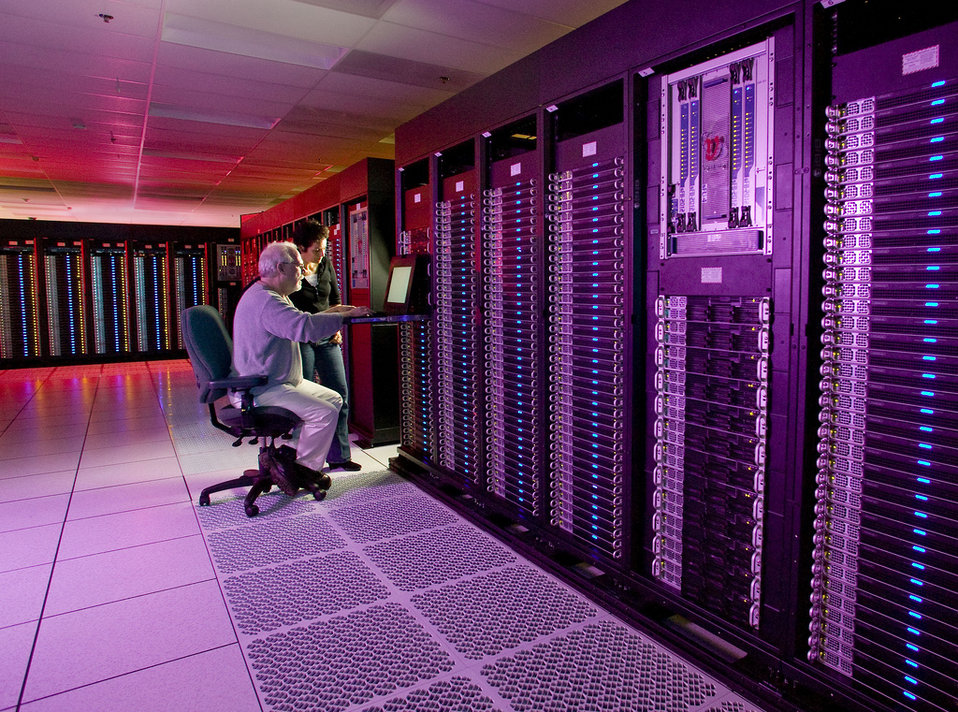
Debbie San Maria and Mike Haskell tend to the Tri-Lab Linux Capacity Clusters(TLCC) JUNO and MINOS supplied by Appro, and located in the Terascale Simulation Facility at Lawrence Livermore National Laboratory.

The clusters are used by all three defense laboratories- Los Alamos, Sandia and Livermore. The new computers provide much needed 'capacity' computing, running larger numbers of smaller jobs simultaneously on a single high-performance machine. Juno and Minos are some of the first Linux clusters.